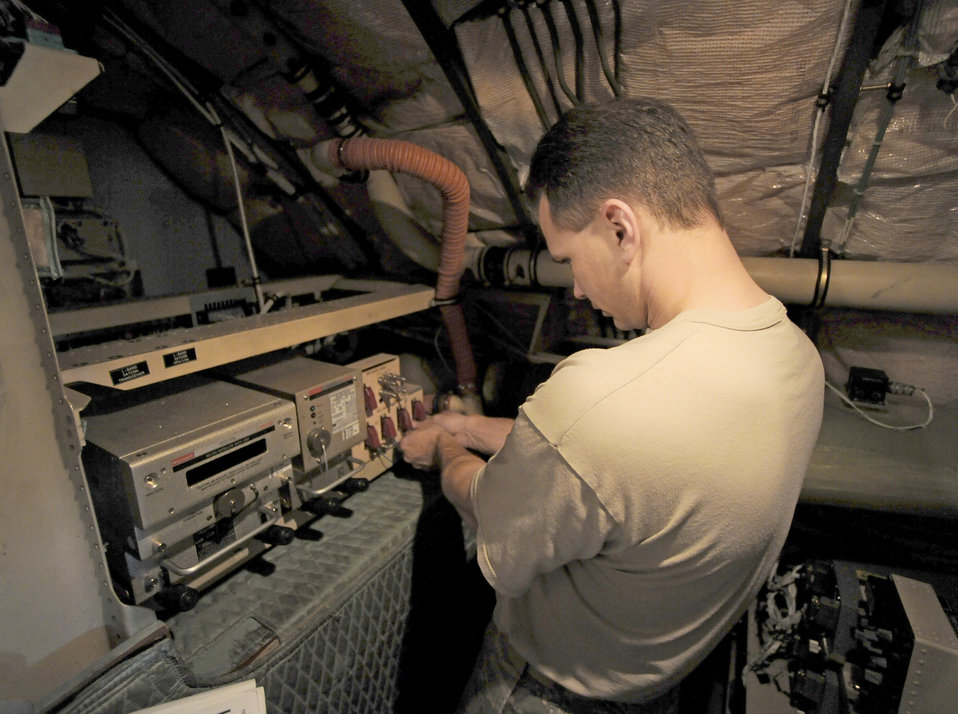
Preflight inspections

Tech. Sgt. Mark Dewitz connects a data cable to a navigation port on a C-5 Galaxy April 12, 2011, at Spangdahlem Air Base, Germany. Sergeant Dewitz is an expeditor assigned to the 726th Air Mobility Squadron.